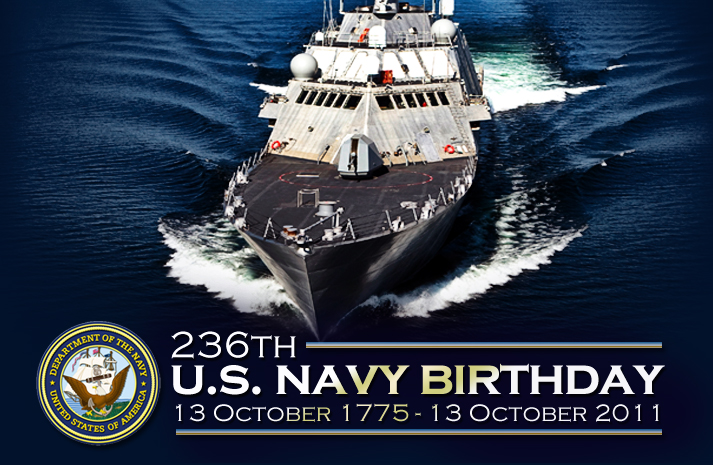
236th U.S. Navy Birthday